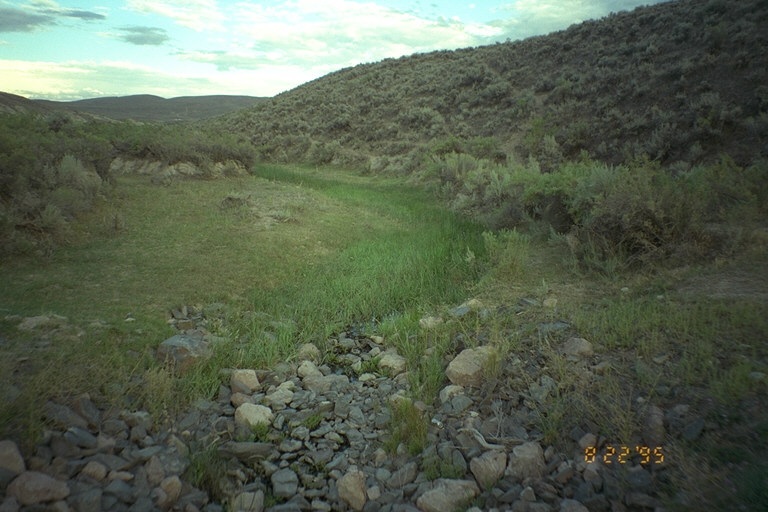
Riparian area Public Lands Salmon Field Office UCSC Upper Columbia Salmon Clearwater District